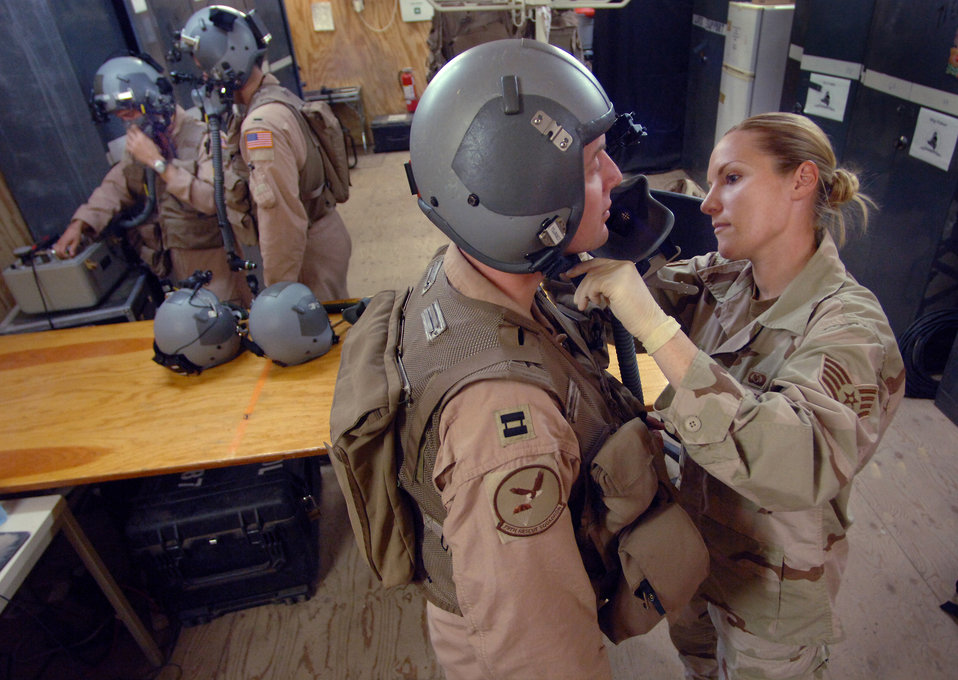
Does it fit?

Staff Sgt. Elizabeth Eggel fits Capt. Jesse Enfield's oxygen mask Dec. 17 prior to a refueling mission over the Horn of Africa. Sergeant Eggel, the only life support technician deployed to the Horn of Africa, provides support to more than 40 Air Force, Navy and Marine aircrew based at Camp Lemonier, Djibouti.